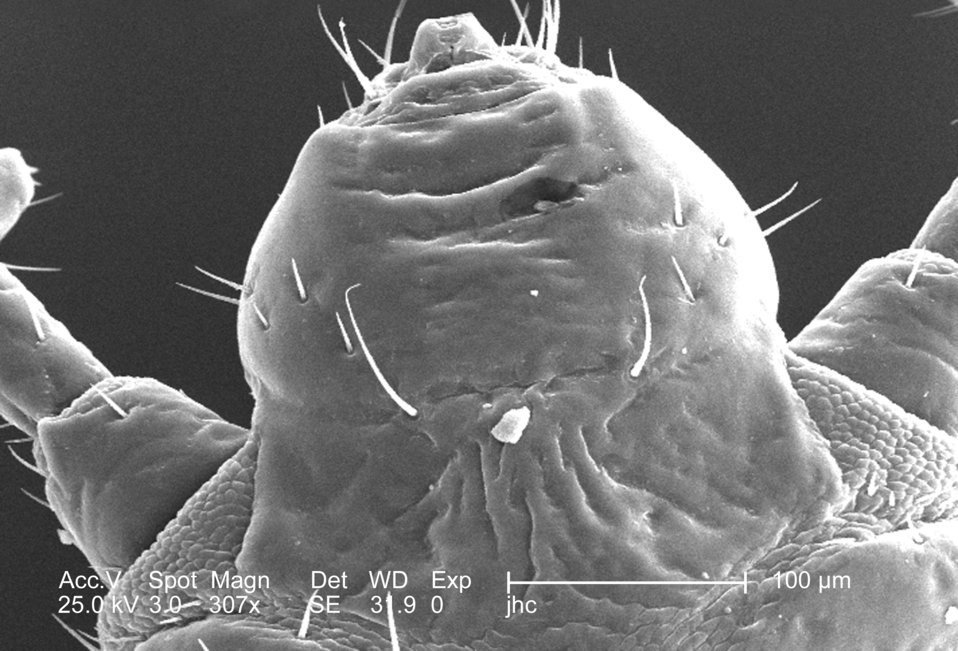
This was one of five scanning electron micrographic (SEM) images (PHIL# 9243 - 9247), successively magnified at higher and higher values, which focused on the head region of a female body louse, Pediculus humanus var. corporis from a ventral perspective. At a moderate magnification of 307x, this SEM revealed some of the insect's exoskeletal morphology exhibited by the cephalic region. Note the two partially visible, bilaterally situated antennae composed of three main segments: visible here was the most proximal scape and the pedicle, and not in the field of view, the multi-segmented flagellum. The antennae, and the insect's body sport sensorial 'hairs' known as "setae', both of which provided the organism with a "picture' of its environment, by taking readings in thermal, chemical, and mechanical changes encountered in its immediate surroundings. Its cone-shaped mouth is located at the very top of the image.